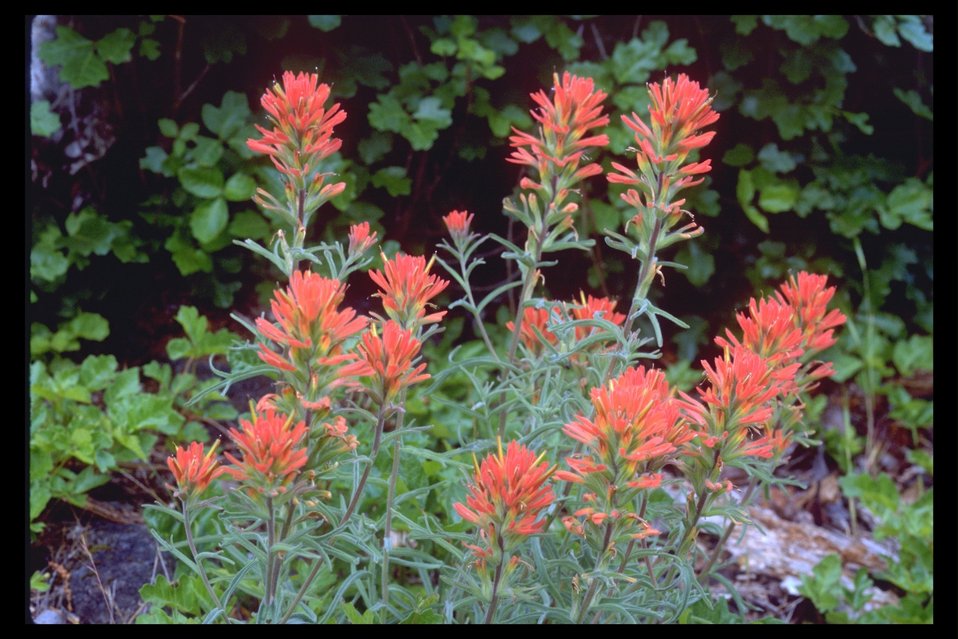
Indian Paintbrush (Castilleja sp.) found at Upper Table Rock.